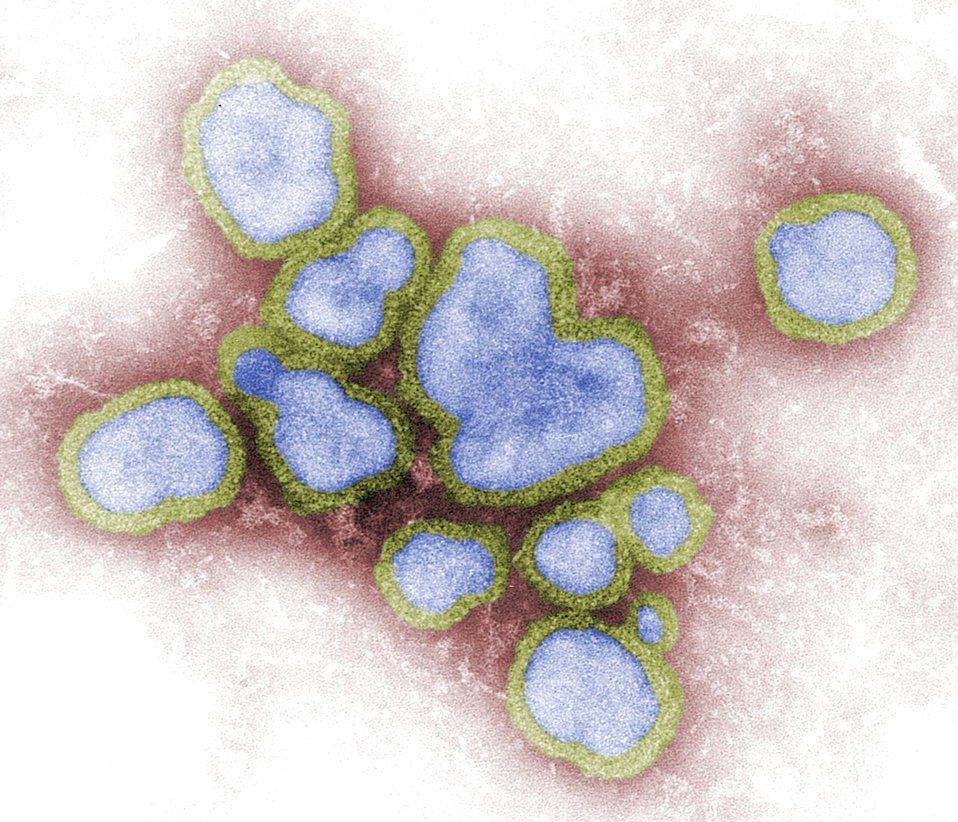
This digitally-colorized negative-stained transmission electron micograph (TEM) depicted a number of influenza A virions.